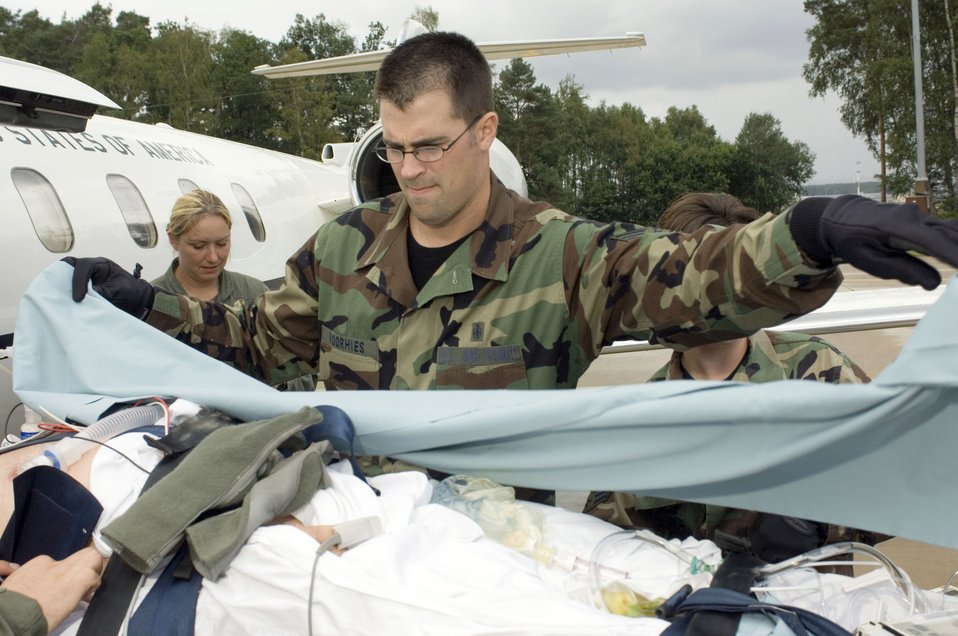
Staging flight sees lull in hectic routine Staging flight sees lull in hectic routine Staging flight sees lull in hectic routine Staging flight sees lull in hectic routine Staging flight sees lull in hectic routine

RAMSTEIN AIR BASE, Germany -- Tech. Sgt. David Voorhies covers a critical patient before he is transported to nearby Landstuhl Regional Medical Center. He is assigned to the 435th Contingency Aeromedical Staging Facility here and is deployed from Lackland Air Force Base, Texas.